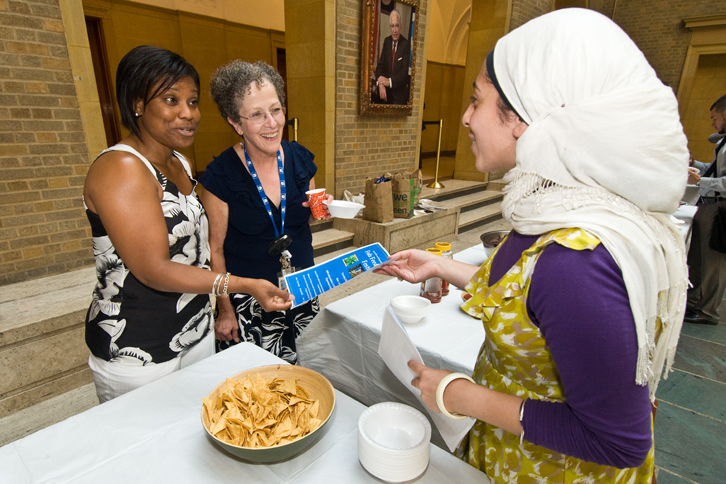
During a 'Feds Farmers and Friends Feed Families (F5) Summer Food Drive' event held at the United States Department of Agriculture in Washington, DC, Friday, July 23, 2010. Nada Zohdy (right), Center for Faith Based & Neighborhood Partnerships, Truman Fellow invites Karen Comfort, Acting Chief of Staff, Office of the Administrator, Agricultural Marketing Service (left), and Zee Cliburn, Agricultural Marketing Service, Cotton & Tobacco Programs, Cotton Marketing Specialist (center) to an F5 event sponsored by the USDA and the Department of Energy. USDA Photo 10di1444-05.